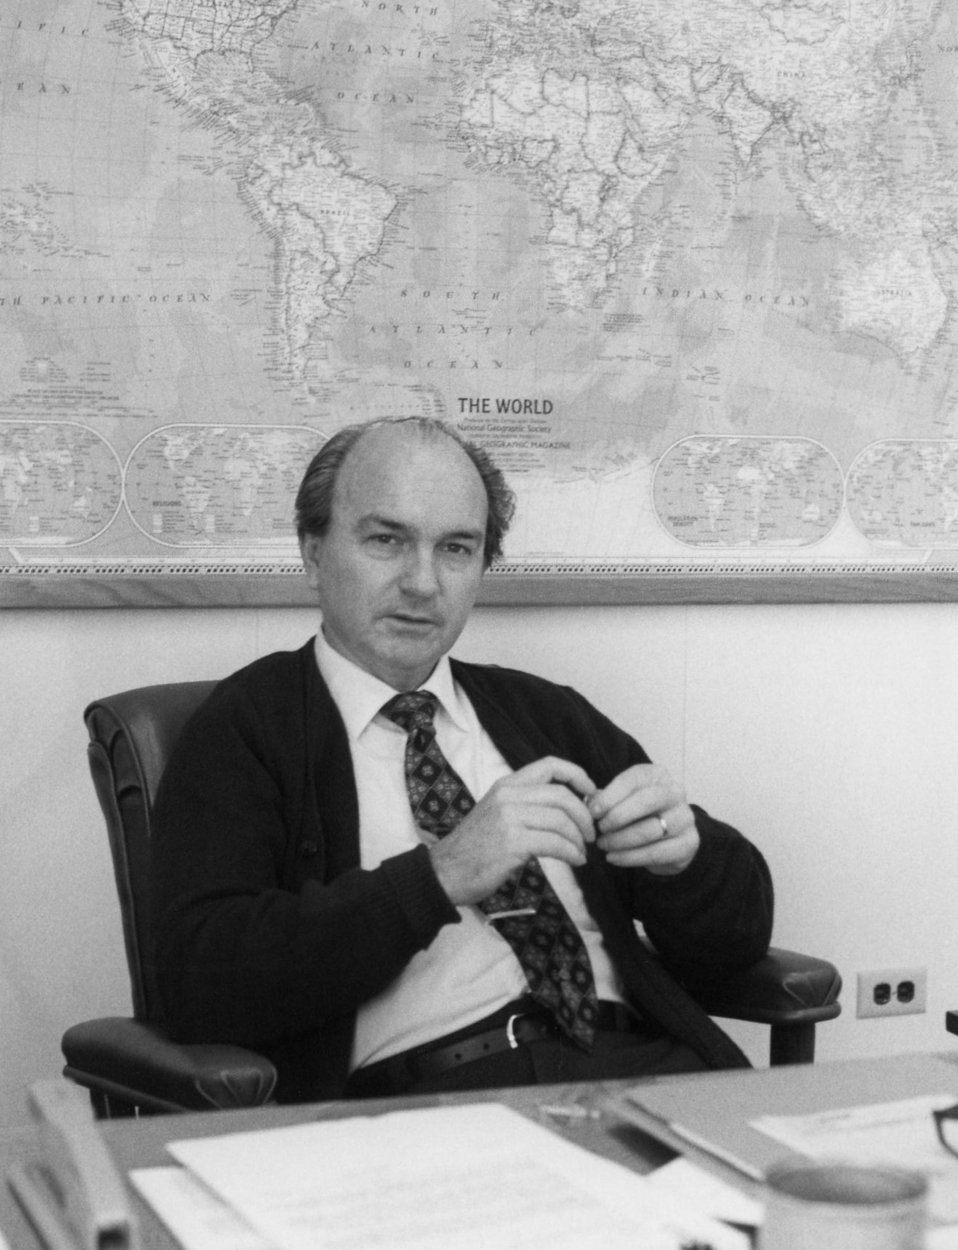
This 1986 photograph showed Walter Dowdle, Ph.D., a senior consultant to the World Health Organization (WHO) Polio Eradication Program, and a member of the Task Force for Child Survival and Development.